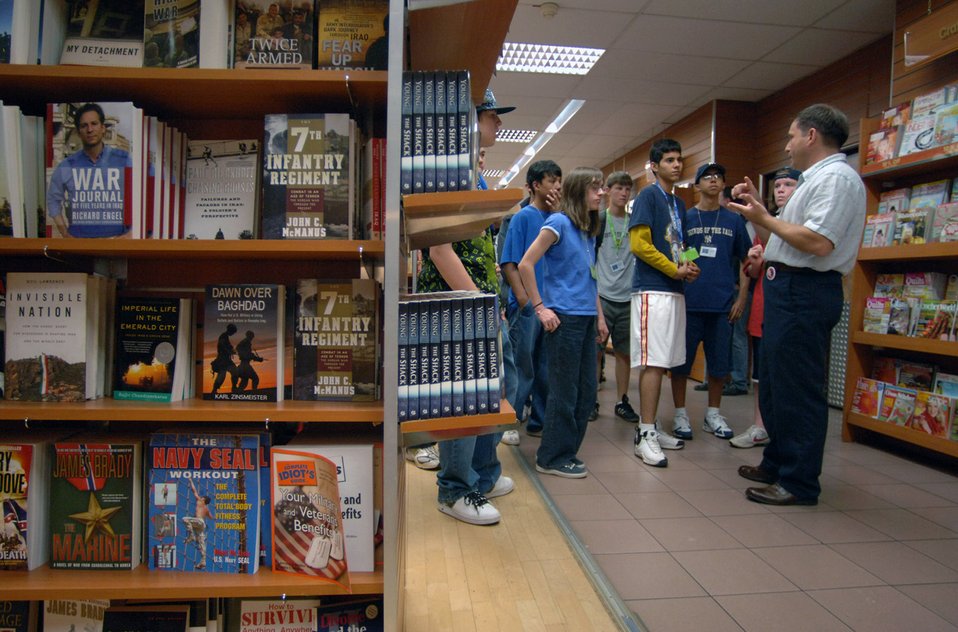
Keystone leadership summit reaches out to USAFE teens

Joe Fischer, the base exchange manager at Ramstein Air Base, Germany, gives a tour to teens attending the first Air Force-sponsored European Keystone Club Leadership Summit as part of a professional job-shadowing endeavor. More than 100 teens from 11 U.S. Air Forces in Europe bases attended the week long summit at Ramstein AB from July 28 to Aug. 1.